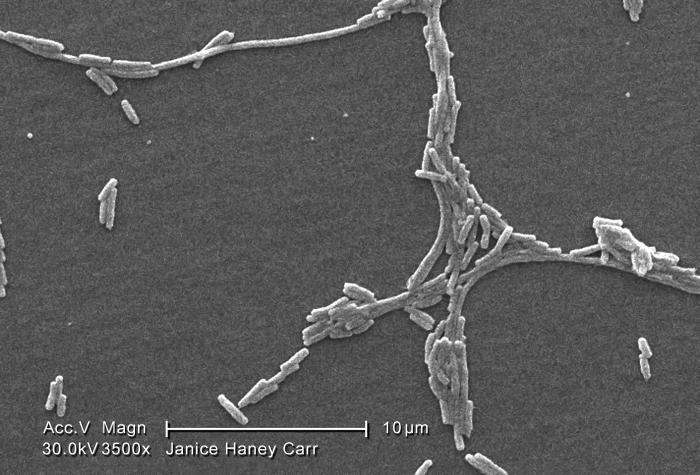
Under a moderate magnification of 3500X, this scanning electron micrograph (SEM) depicted a number of Gram-negative Legionella pneumophila bacteria. Please see PHIL 11092 through 11152 for additional SEMs of these organisms, specifically PHIL 11132 for a colorized version of this image. Of particular importance, is the presence of polar flagella, and pili, or long streamers, which due to their fragile nature, in some of these views seem to be dissociated from any of the bacteria. Both the flagella and the pili are seen in a somewhat better mode in the colorized version of this image.